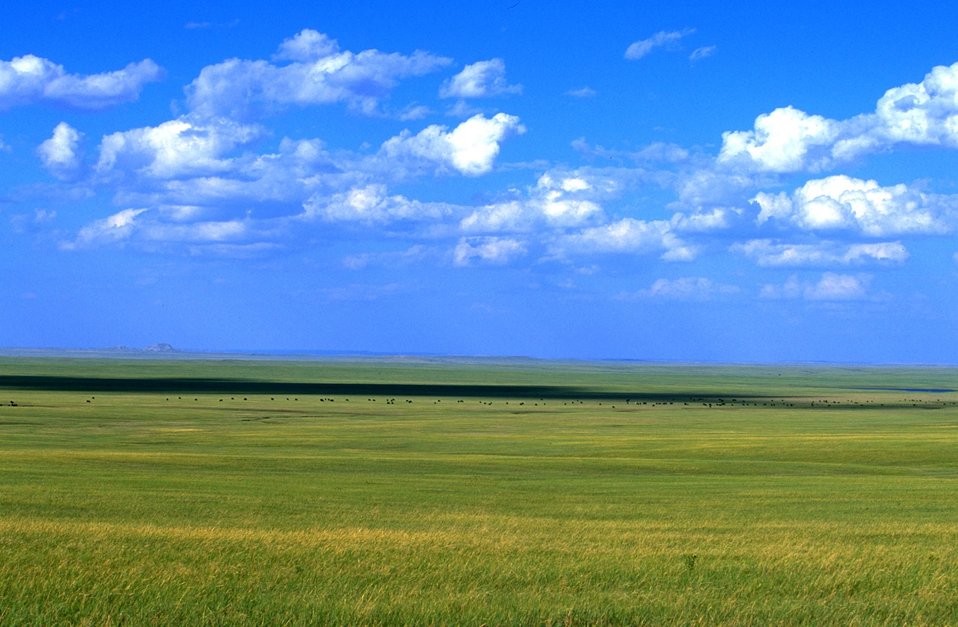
Cattle grazing on grass 35 miles north of Belle Fourche